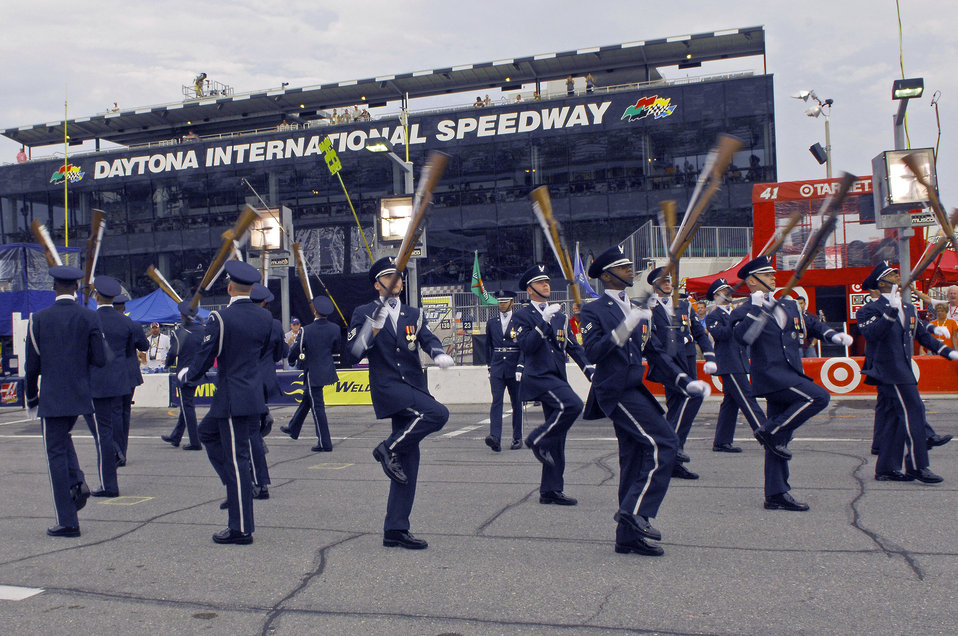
Drill team performs at NASCAR race

Members of the Air Force Drill Team perform their 16-man sequence in front of more than 150,000 spectators during the pre-race events at NASCAR's Pepsi 400 July 7 in Daytona, Fla. The drill team joined Secretary of the Air Force Michael W. Wynne to represent the Air Force as a part of the